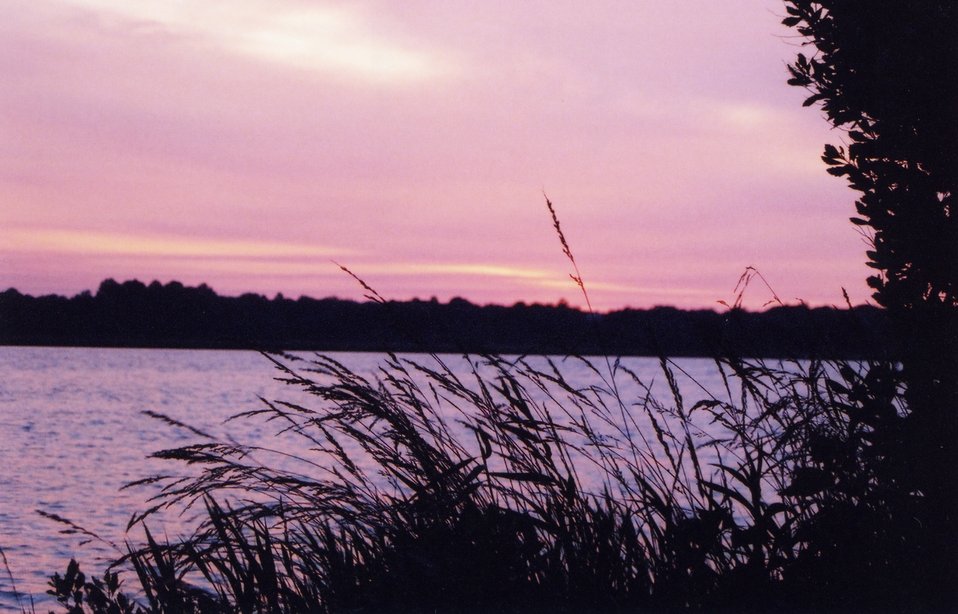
Sunset over the Patuxent River.